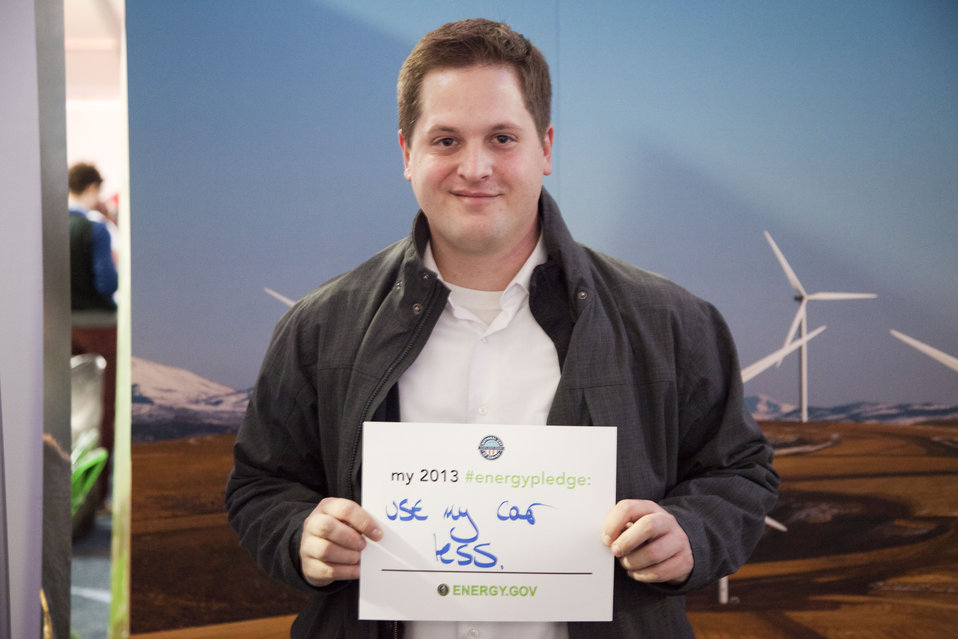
What's your #energypledge?